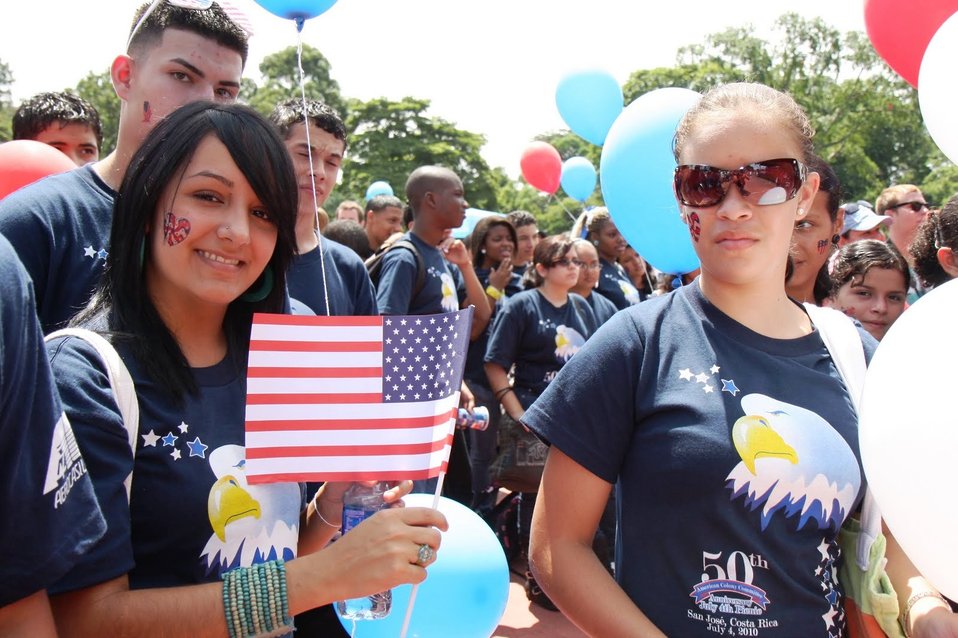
Students Pose for a Photo

Students from U.S. Embassy San Jose in Costa Rica's English Access Microscholarship Program pose for a photo during the U.S. Independence Day celebration on July 2, 2010, in San Jose, Costa Rica.